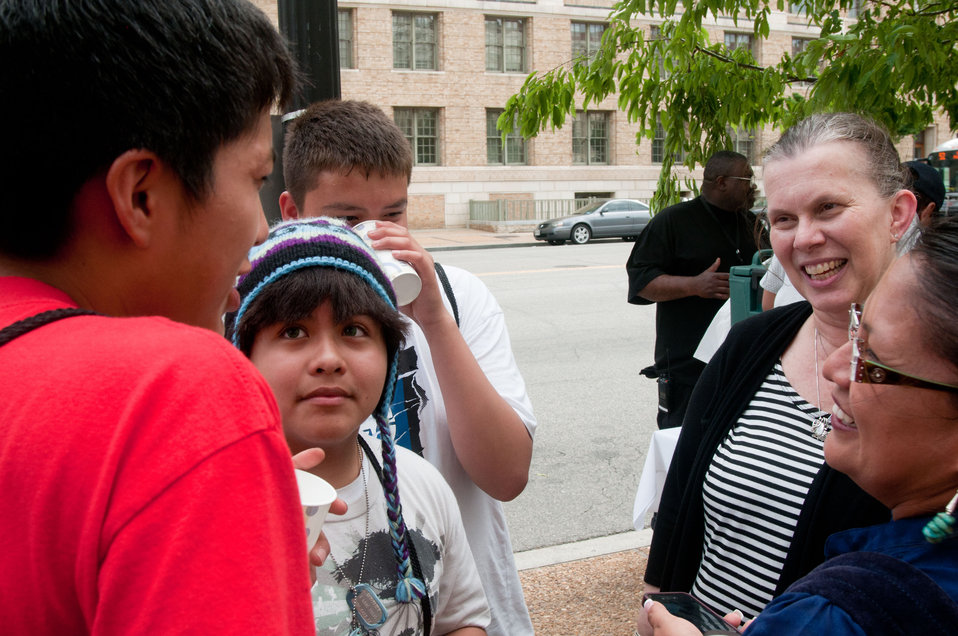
Senior Advisor to Secretary Vilsack with the USDA Office of Tribal Relations Janie Hipp, spent talks with Students from Eastern and Western Tribes, Southeast Alaska, and Tuba City, Arizona came to the Nation’s Capitol to plant vegetable seeds that are indigenous to North America. The garden is part of the Headquarters’ People’s Garden. The event took place in Washington, DC, on Wednesday, April 27, 2011.